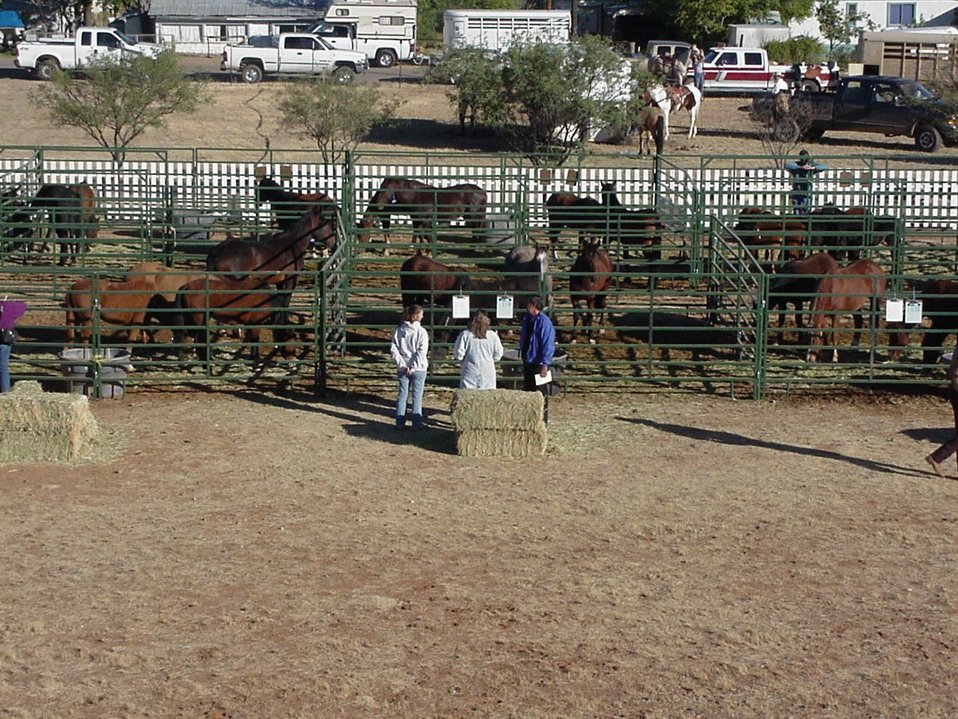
The horses wait in their corrals to be adopted by loving new families.